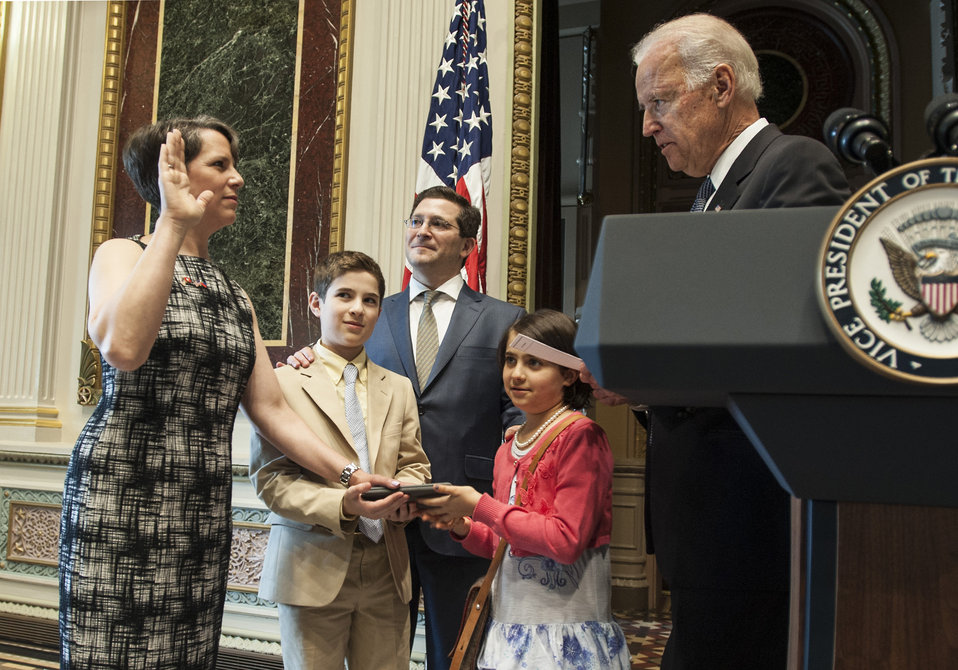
Vice President Biden swears in Suzi LeVine as the U.S. Ambassador to Switzerland and Liechtenstein

Vice President Joe Biden swears in Suzi LeVine as the U.S. Ambassador to Switzerland and Liechtenstein at the Executive Office Building in Washington, D.C., on May 30, 2014. Honoring American innovation and entrepreneurship, Ambassador LeVine becomes the first American Ambassador to take take the oath over an electronic device. Ambassador LeVine is joined by her husband, Eric LeVine, and their two children, Sidney and Talia.